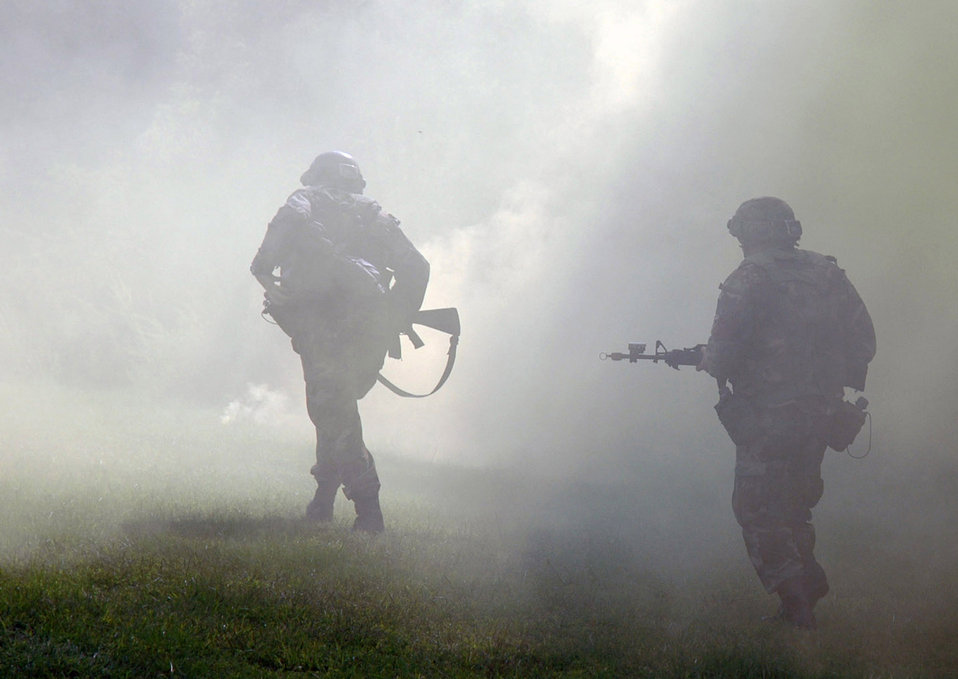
Contingency training sharpens combat skills

Students in the Air Mobility Warfare Center's Advanced Contingency Skills Training Course at Fort Dix, N.J., practice combat patrolling during a training session at a tactical range Sept. 18. More than 60 Airmen are participating in the training course